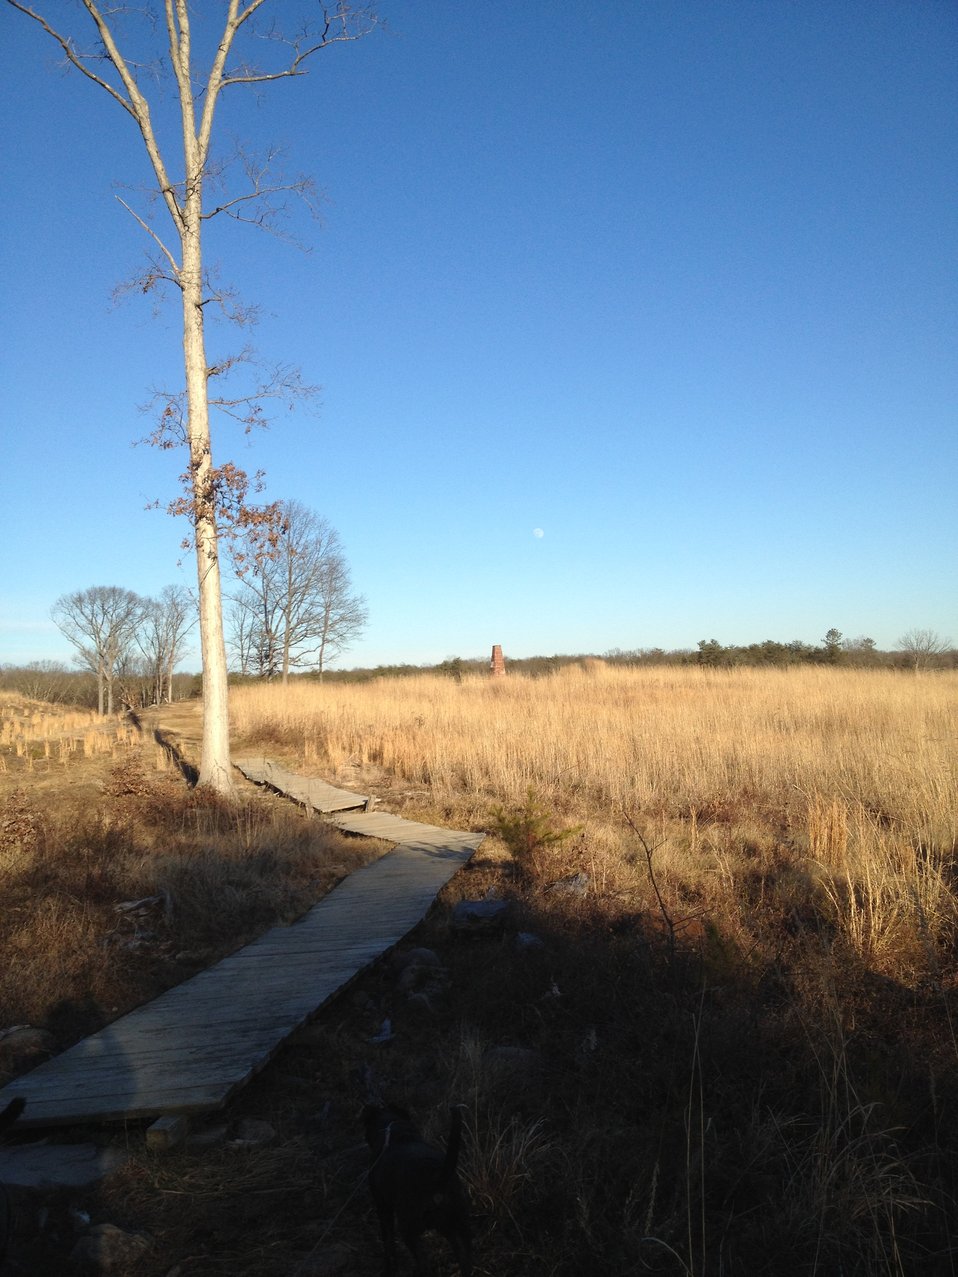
Deep Cut Atop 2nd Manassas

View from the 2nd Manassas 'Deep Cut' unfinished railroad bed from which Confederates held off Union attack. The 2nd Battle of Manassas occurred in 1862, from which the Union retreated to Washington, D.C. and the Capitol became a hospital for causalities.